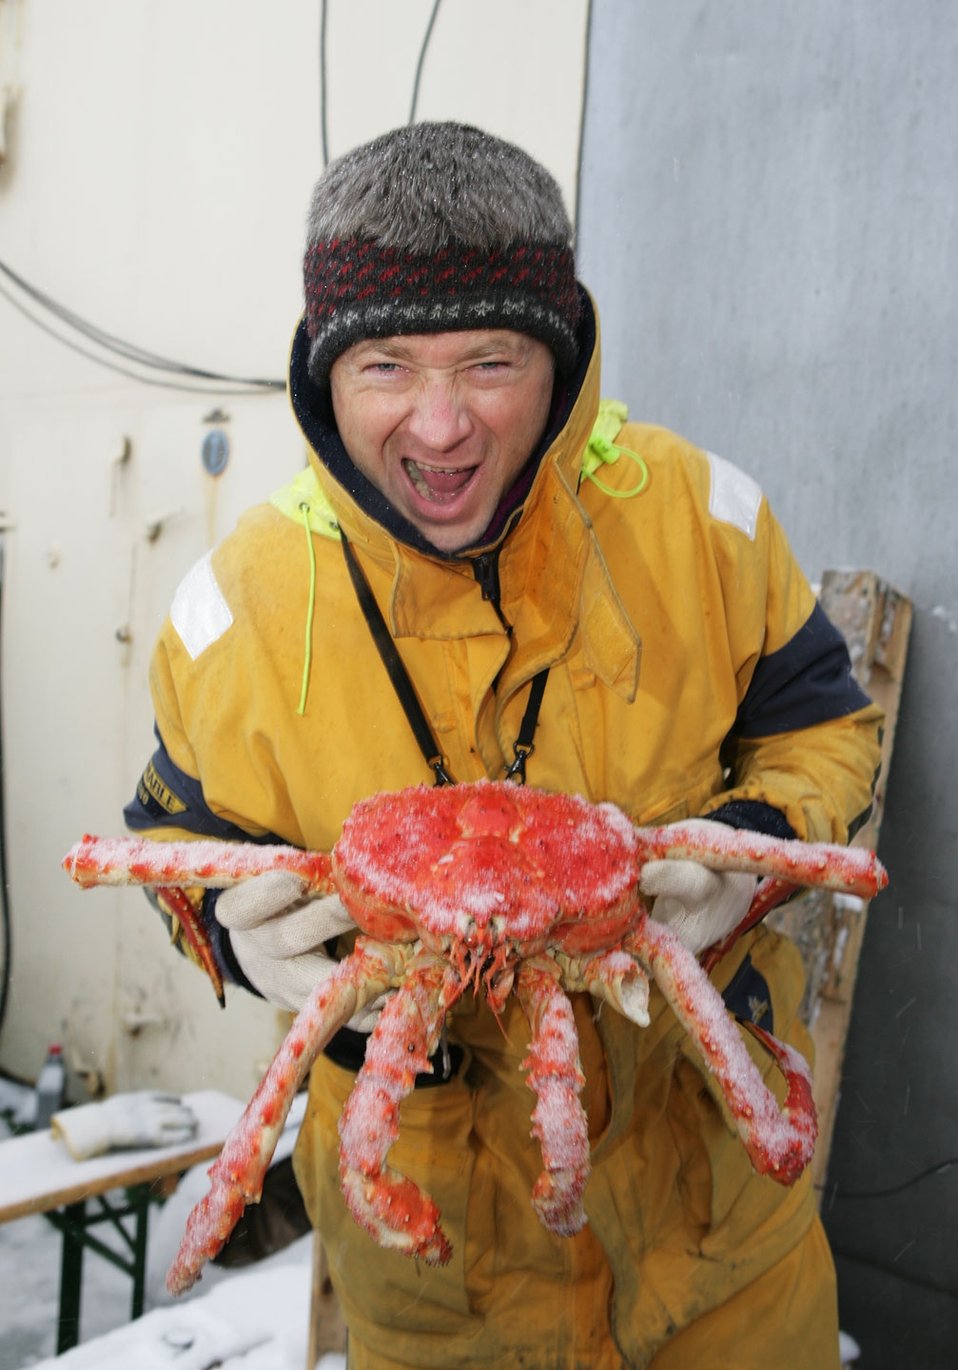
A large crab obtained from the deep. Wonder if it will become a scientific specimen or dinner?